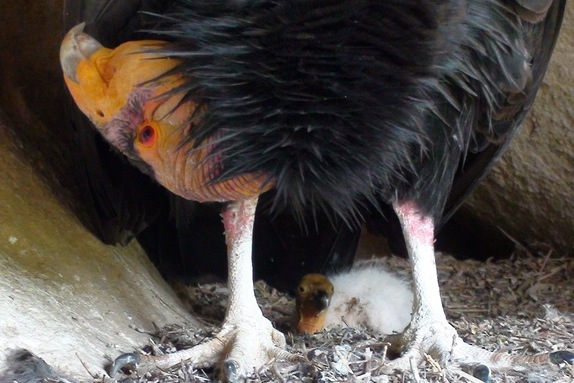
California condor and chick

An endangered California condor keeps protective watch over its chick in a nesting cave.
Hopper Mountain National Wildlife Refuge, CA
Photo: John Brandt/USFWS

Note: Hopper Mountain and Bitter Creek National Wildlife Refuges were created as habitat for the critically endangered California condor. Captive-bred California condors are released there, and chicks have recently successfully fledged in the wild. Both refuges are closed to the public for the birds' protection, but condors can sometimes be seen from roads bordering the refuges. Contact refuge staff for more information about condors and other native CA species.